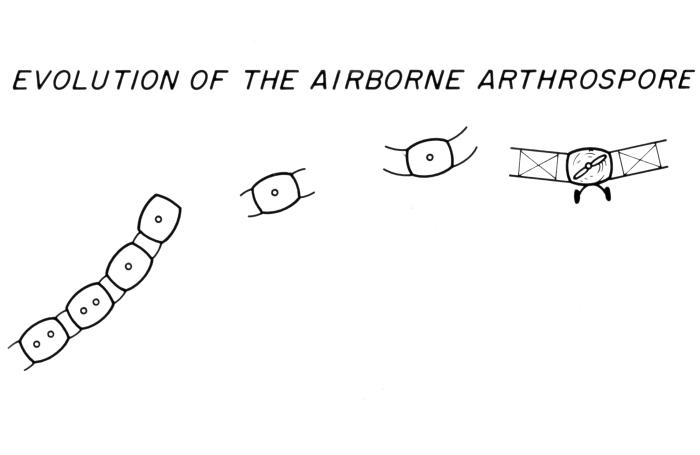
Illustration of arthroconidia becoming airborne